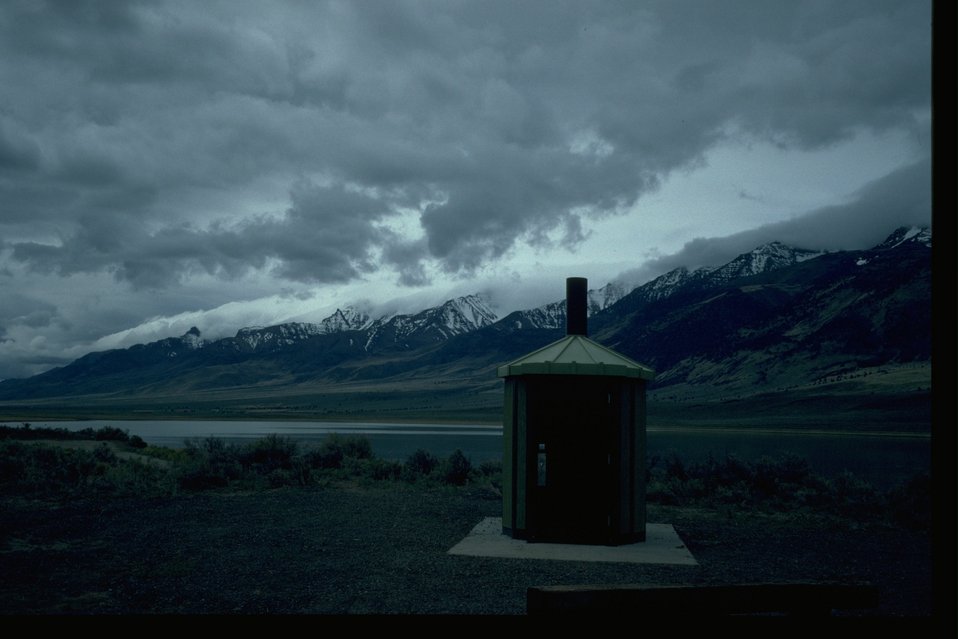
New toilet Mann Lake with the Steens Mountains in the background.